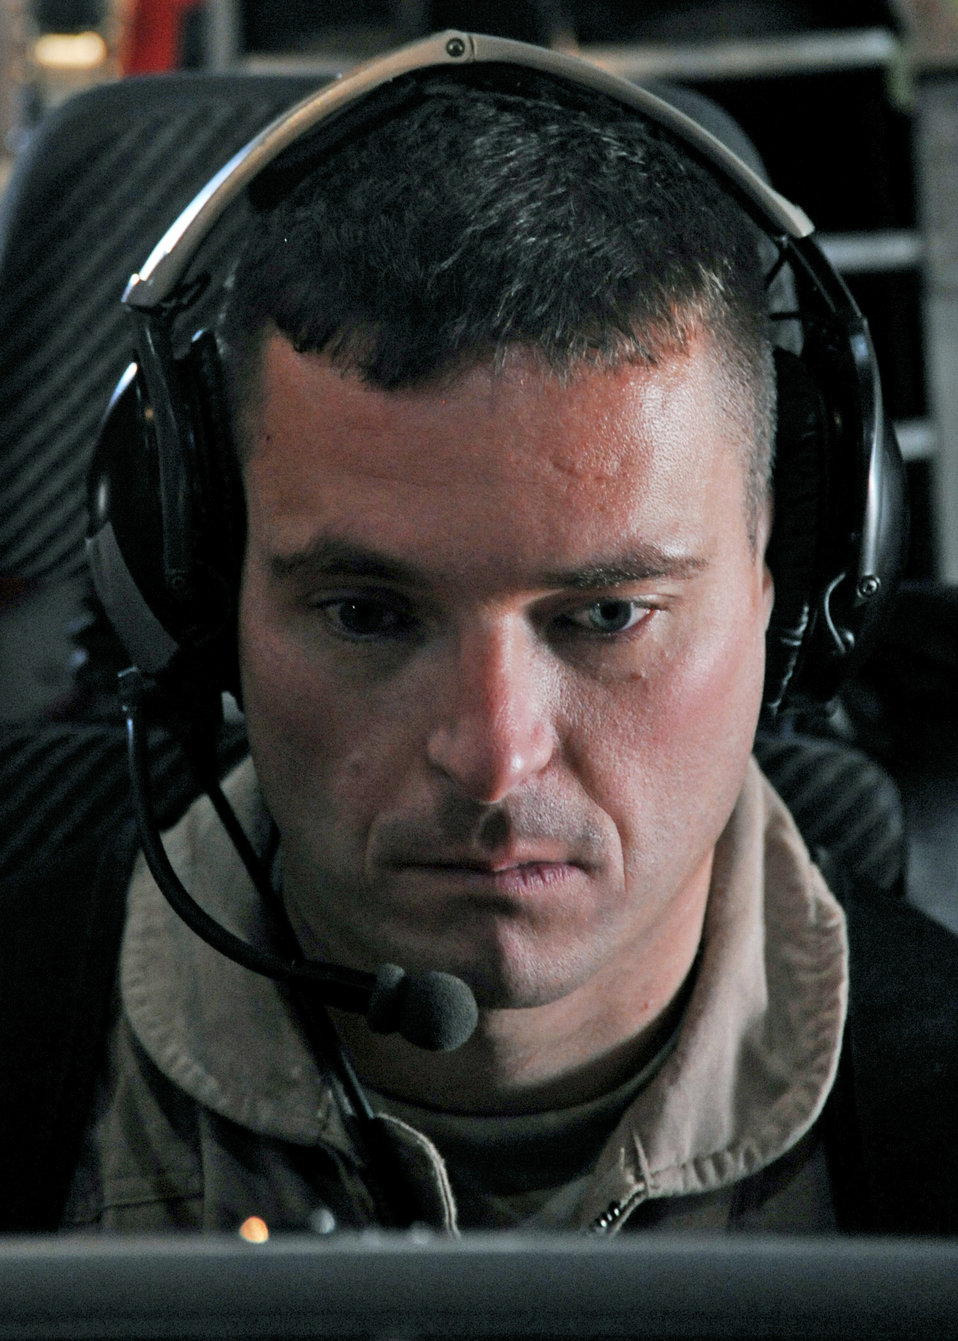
Convoy 911: Joint unit extends battlespace communication

Capt. Jason Davis prepares for a joint airborne battle staff detachment mission on a C-130 Hercules Nov. 24, 2009. The JABS is a joint operation focused on providing airborne communications support to ground forces. Captain Davis is the 777th Expeditionary Airlift Squadron mission commander.